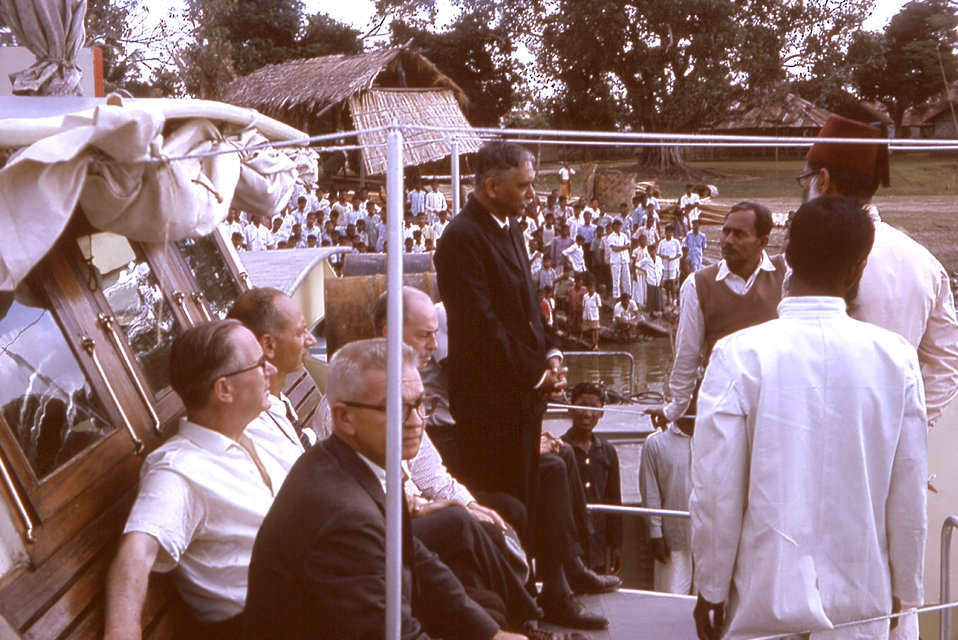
These EIS officers were participating in the dedication of the hospital boat, "Joseph E. Smadel", in East Pakistan, 1964.